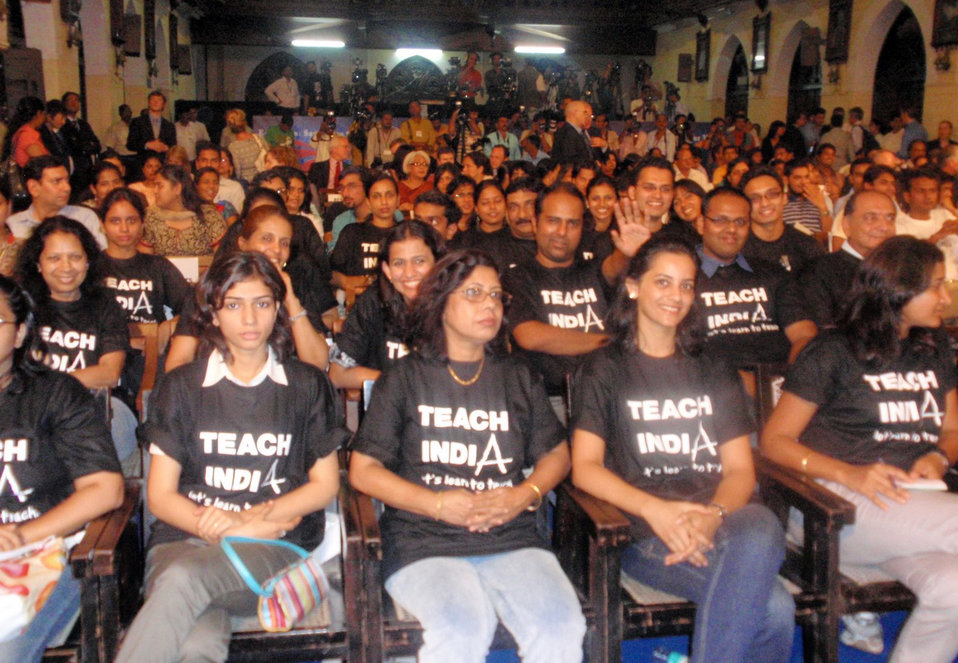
Behind the Scenes: Education and Service Town Hall Meeting

The audience gathers for a town hall meeting discussing education and service with U.S. Secretary of State Hillary Rodham Clinton in Mumbai India July 18, 2009. Much of the audience were 'Teach India' volunteers.